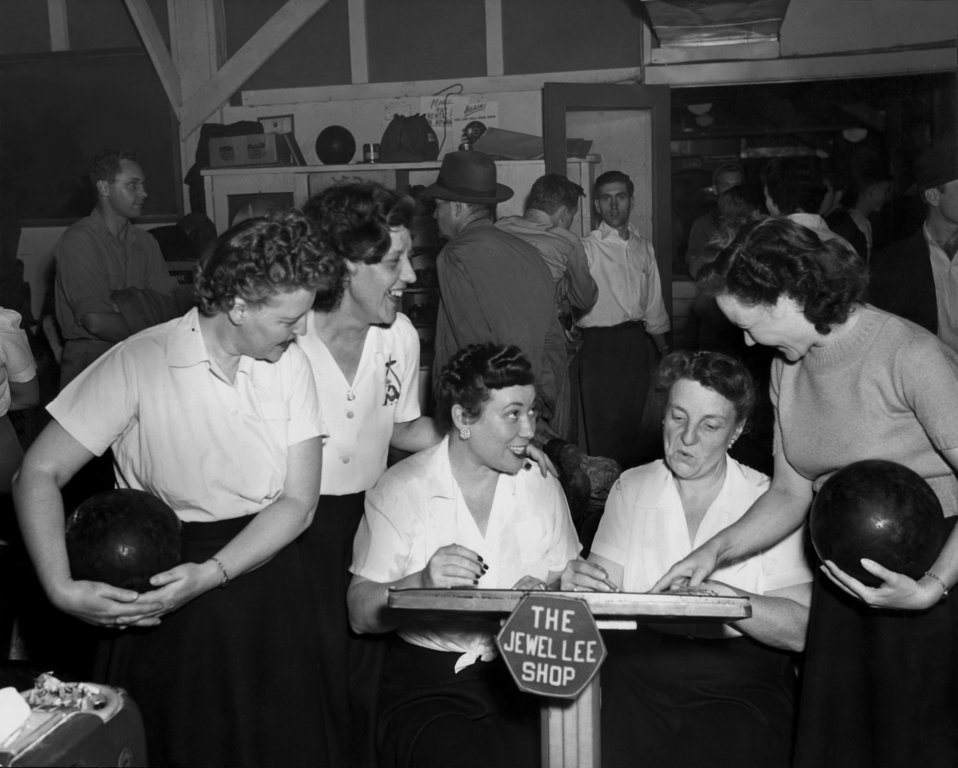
Bowling Team - Jewel Lee Team Oak Ridge

DOE photo Ed Westcot tBowling Team - Jewel Lee Team Oak Ridge Tennessee(1946)